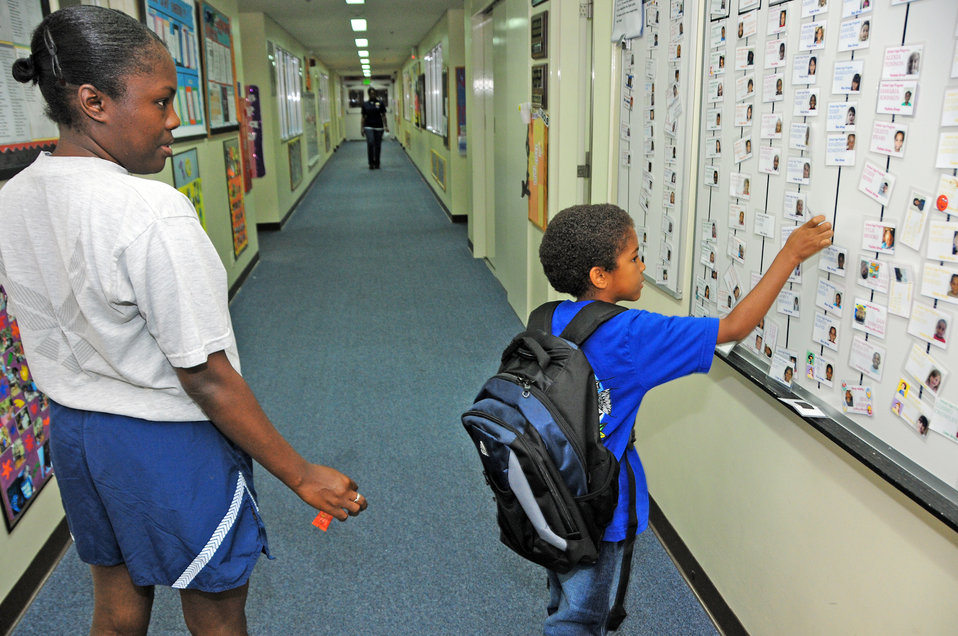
Momma wears combat boots

Staff Sgt. Amber Walker drops her son, William, off at school Sept. 25, 2009 at Kadena Air Base, Japan. Sergeant Walker is a single mother and operations management contingency instructor with Det. 1, 554th Red Horse Civil Engineering Squadron.